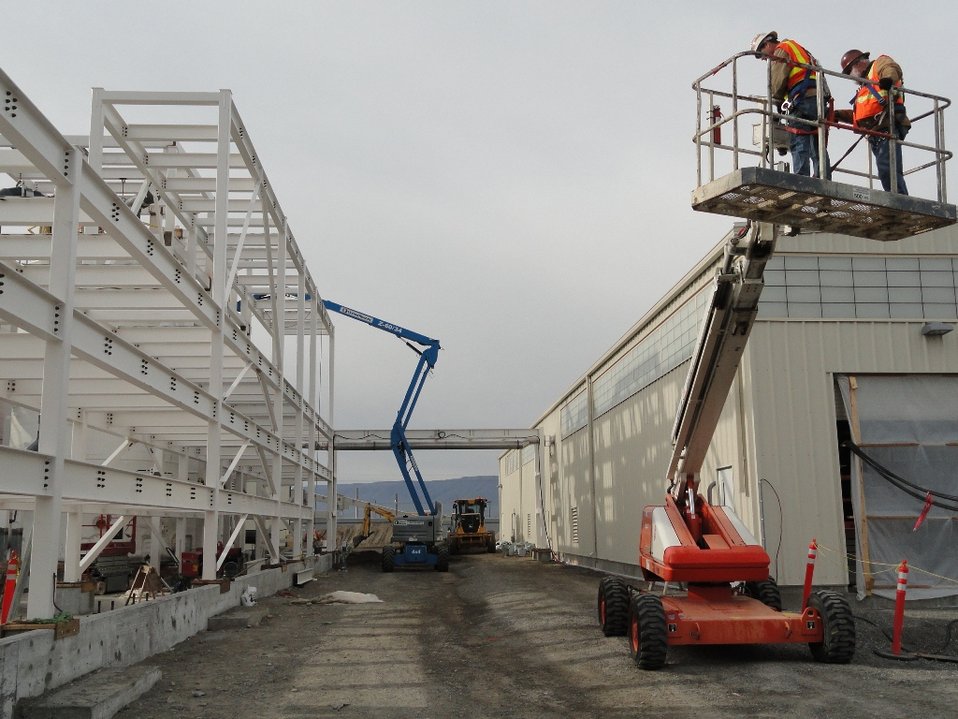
Recovery Act Supports Construction of Site’s Largest Groundwater Treatment Facility

Recovery Act workers in various stages of construction of what will be the largest groundwater treatment facility at the Hanford Site.